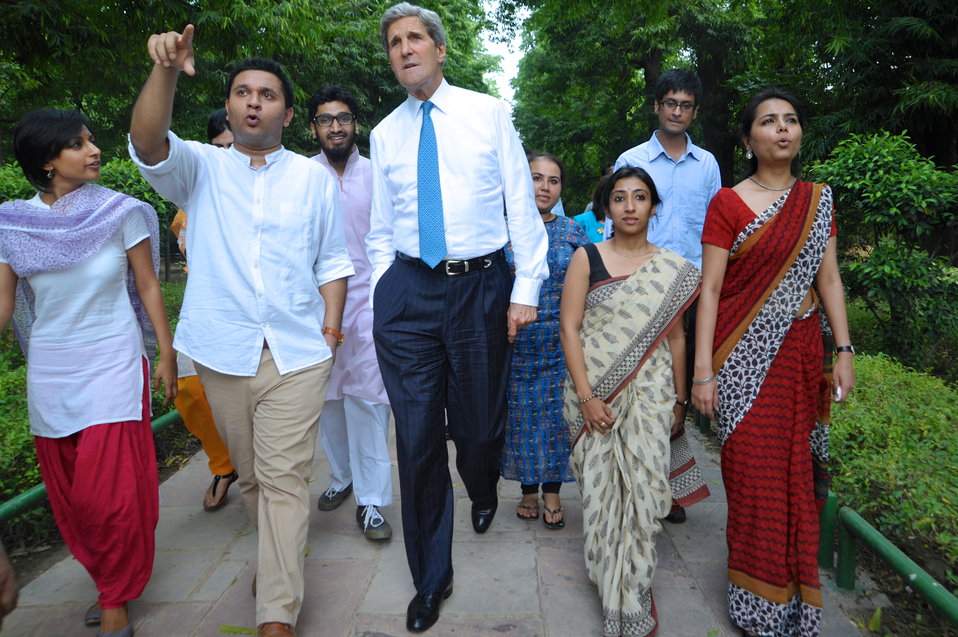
Secretary Kerry Chats With Young Indian Leaders

U.S. Secretary of State John Kerry chats with young Indian leaders who have participated in programs in the United States as he arrives at Lodi Gardens in New Delhi, India, on June 24, 2013.